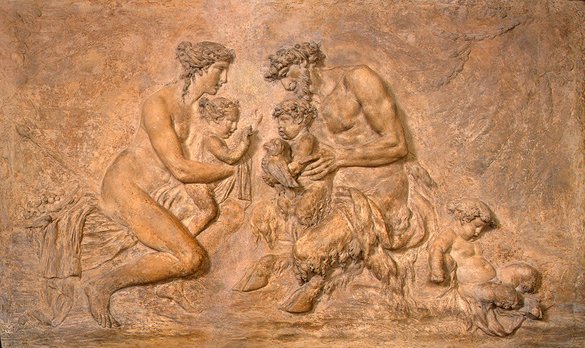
'Faun Family', terracotta relief by Claude Michel, c. 1785, National Gallery of Art, Washington, D. C